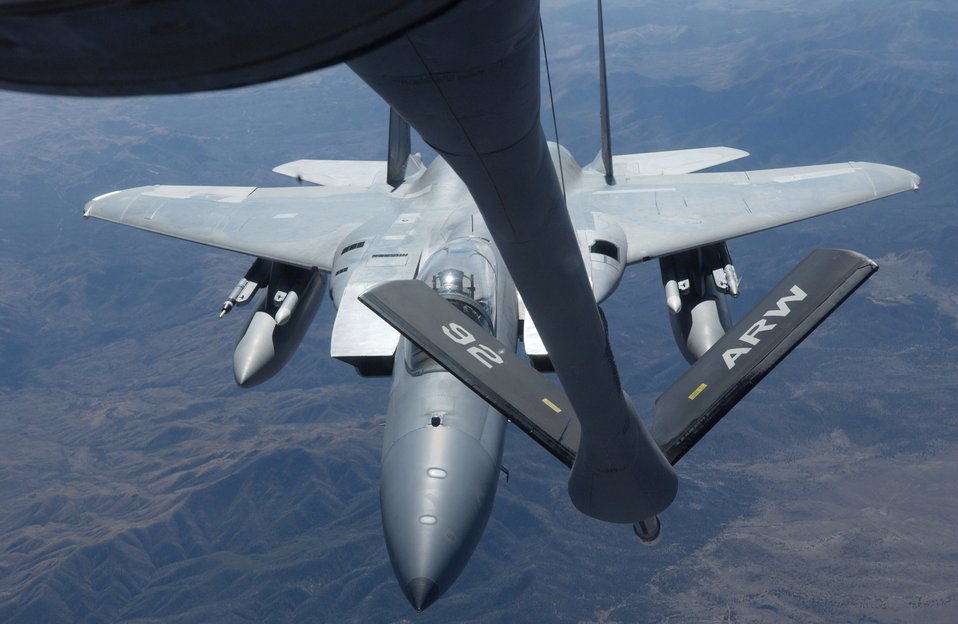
Red Flag kicks off at Nellis

An F-15 Eagle approaches the boom on a KC-135 Stratotanker to refuel Oct. 11 during Red Flag 07-1 being held at Nellis Air Force Base, Nev. Red Flag runs from Oct. 10 to 20 and tests aircrews' warfighting skills in realistic combat situations. The aircraft will be flying missions during the day and night at the nearby Nevada Test and Training Ranges where they will simulate an air war. U.S. servicemembers, with representatives from each branch of service along with coalition forces, are participating in Red Flag.